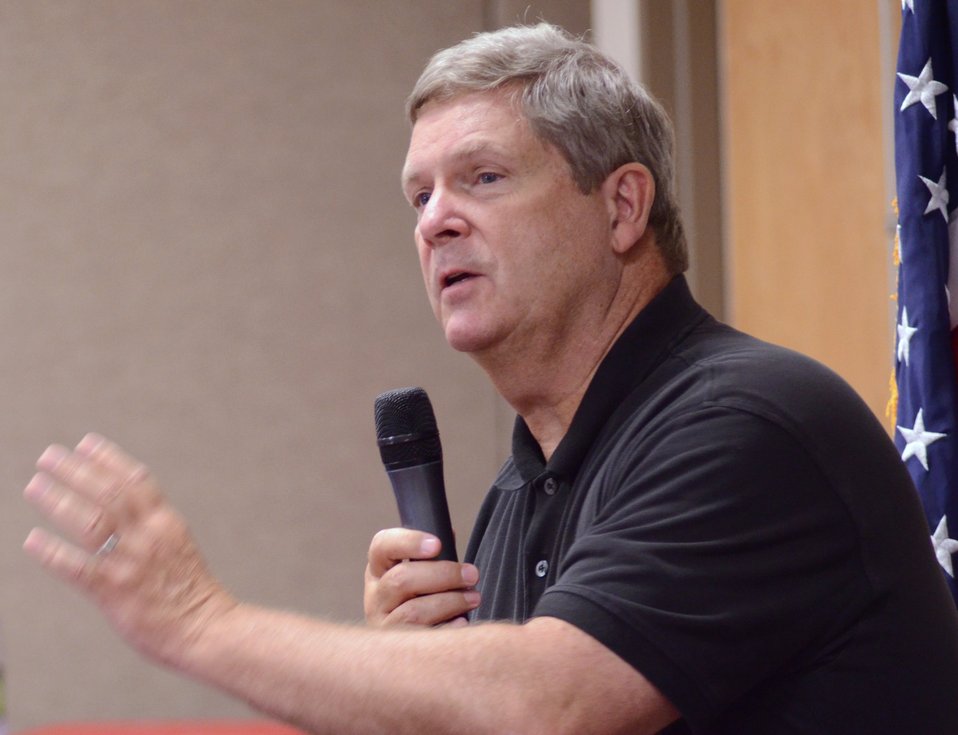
Agriculture Secretary Tom Vilsack speaks at the White House Rural Forum at the Wisconsin State Fair, in West Allis, WI, on Thursday, August 4, 2011, to businesses and community leaders, farmers and ranchers to explore ways federal, state and local officials can work together to improve economic conditions and create jobs. The forum is part of a series of White House Rural Roundtables that are being held across the country this summer with senior Administration officials.